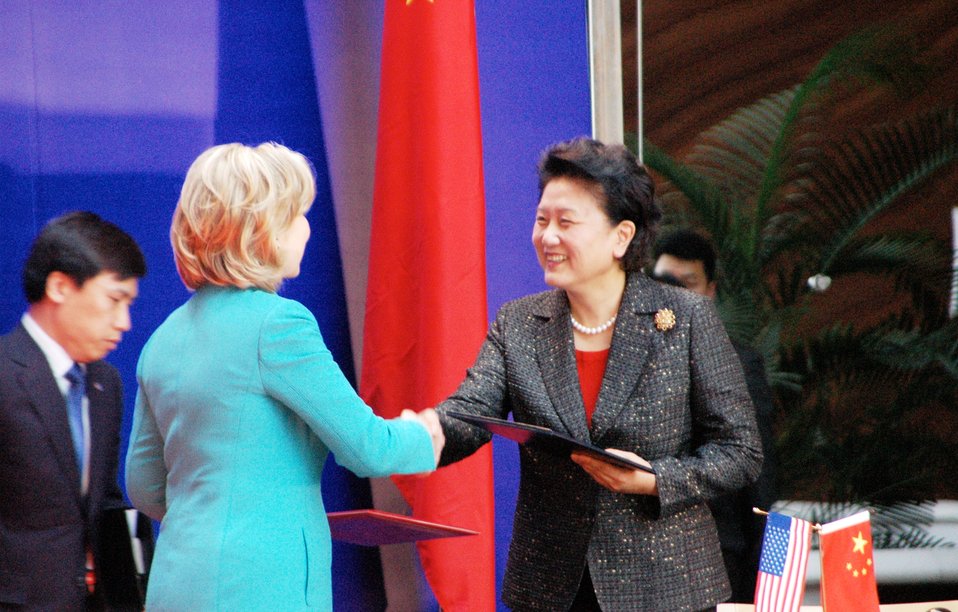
Secretary Clinton and Chinese State Councilor Liu Yandong Shake Hands

U.S. Secretary of State Hillary Rodham Clinton and Chinese State Councilor Liu Yandong shake hands after signing the U.S.-China Consultation on People-to-People Exchange agreement at the National Center for the Performing Arts in Beijing, China, May 25, 2010.